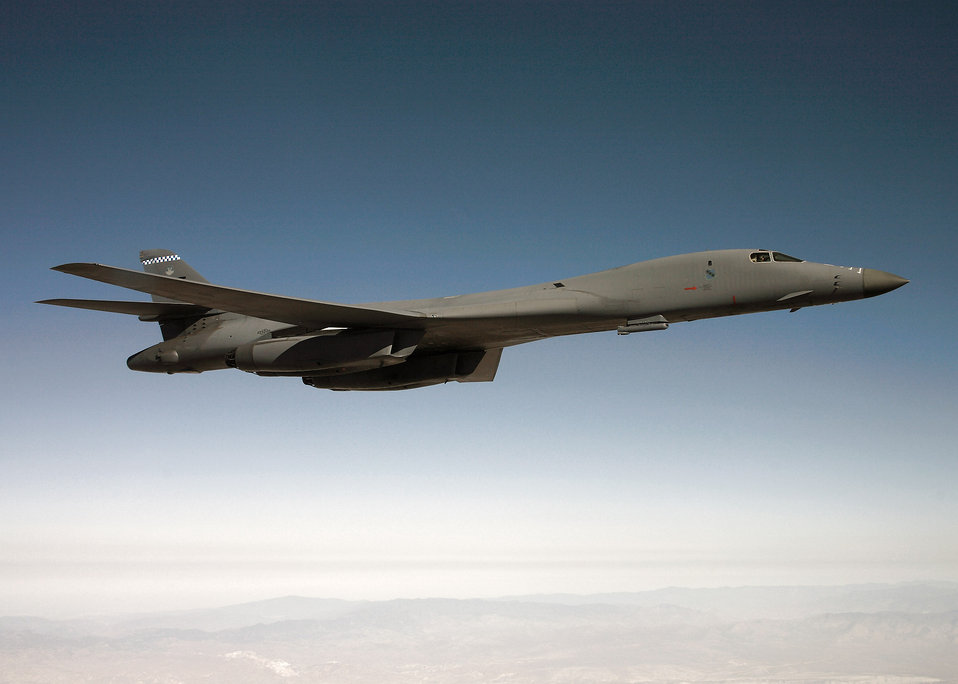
B-1B sniper pod aims to hit summer target

A B-1B Lancer flies on a testing mission carrying a sniper pod May 16 over Edwards Air Force Base, Calif. The sniper pod is scheduled to be fully operational by summer.